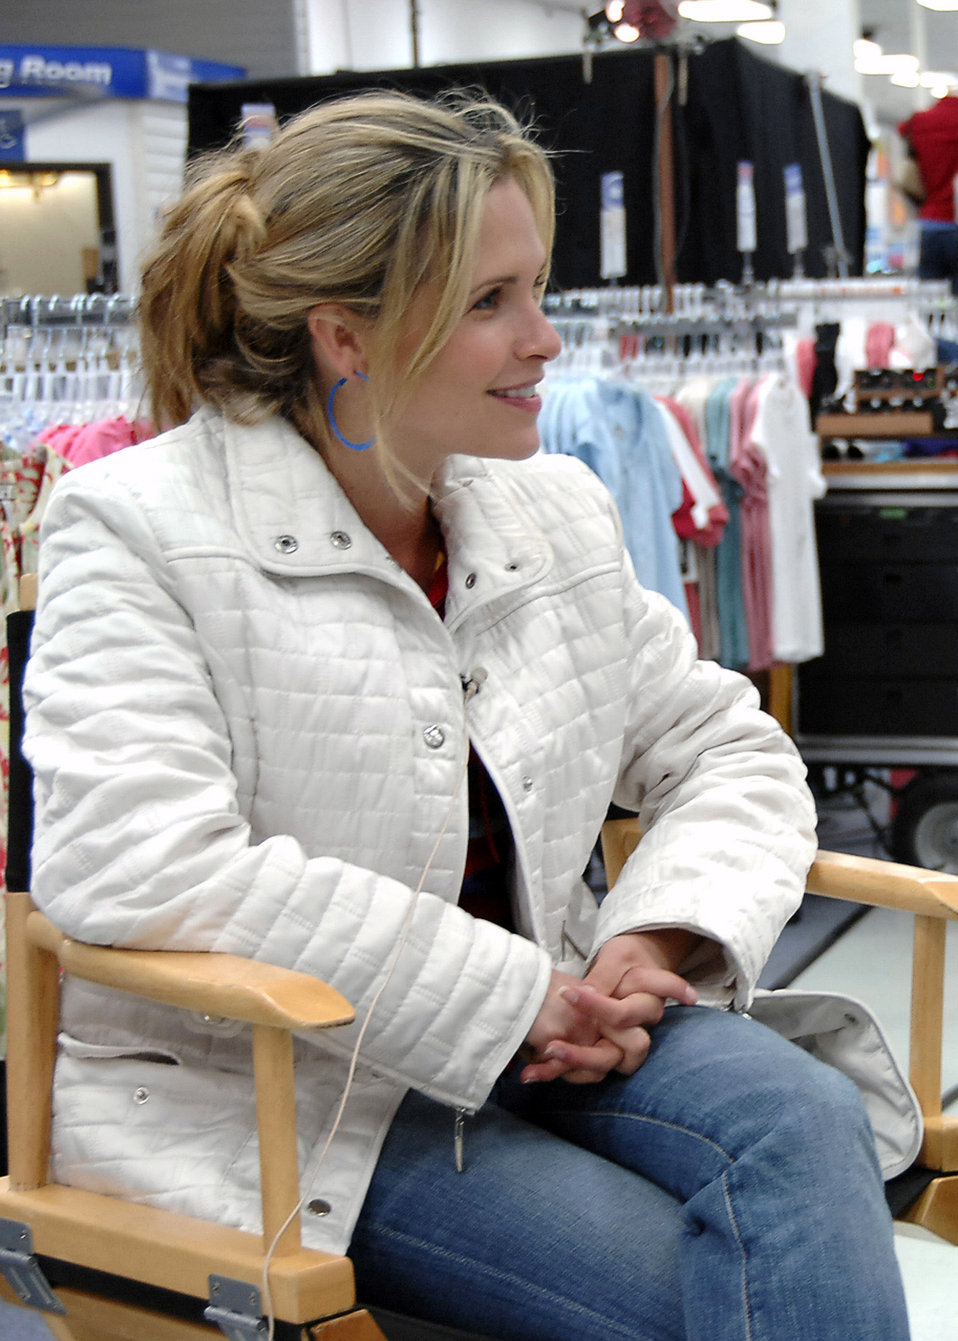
'Army Wives' films on Charleston

Sally Pressman takes a break from filming Lifetime television show